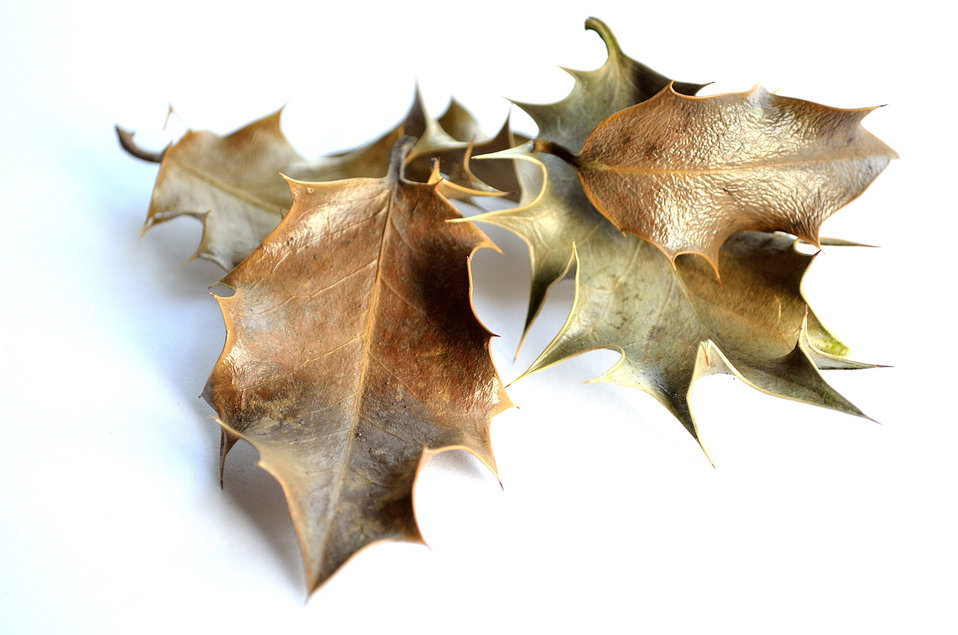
Leaves background.